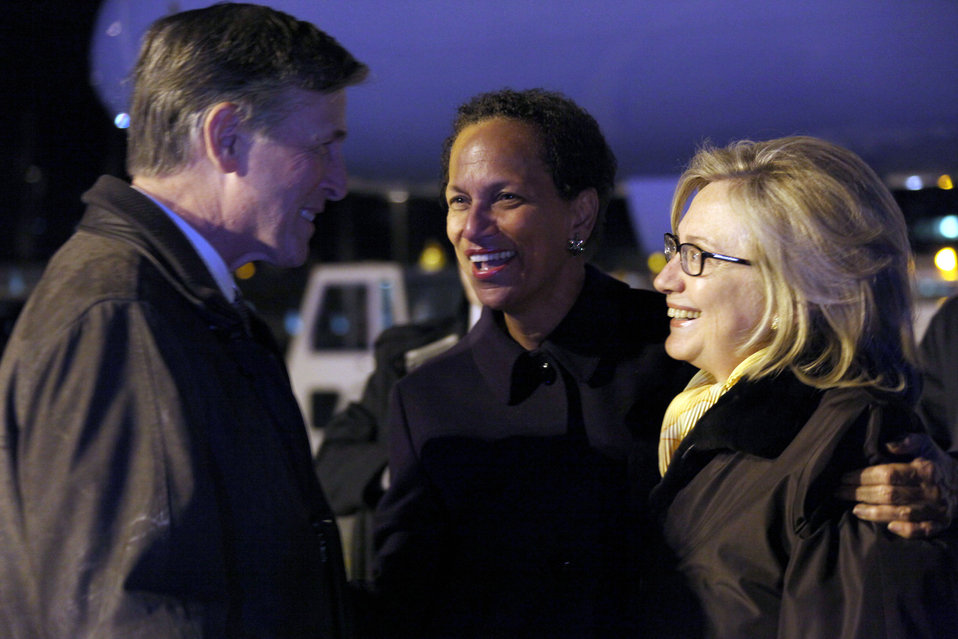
Secretary Clinton Is Welcomed By Ambassadors King and Beyer

U.S. Secretary of State Hillary Rodham Clinton is welcomed at the Geneva International Airport by U.S. Ambassador to the United Nations and Other International Organizations in Geneva Betty E. King, and U.S. Ambassador to Switzerland Donald S. Beyer Jr., in Geneva, Switzerland, on February 27, 2011.